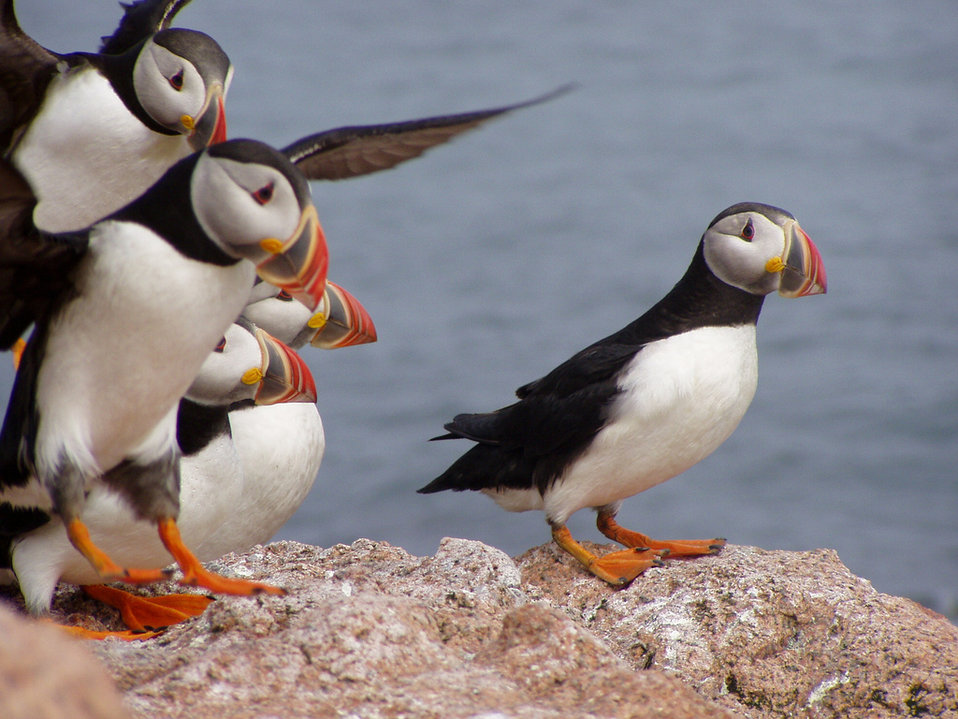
Atlantic Puffins Landing

Maine Coastal Islands National Wildlife Refuge, ME
(Photo: USFWS)

June 8, 2012 was World Oceans Day.